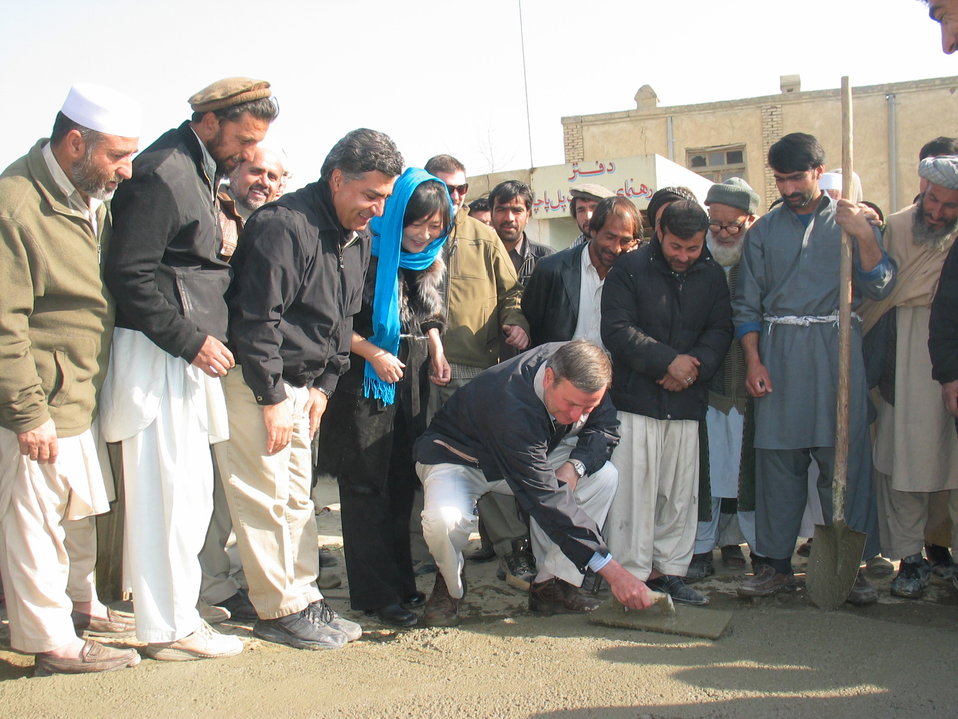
Kabul River Bridge Renovation, December 3, 2010